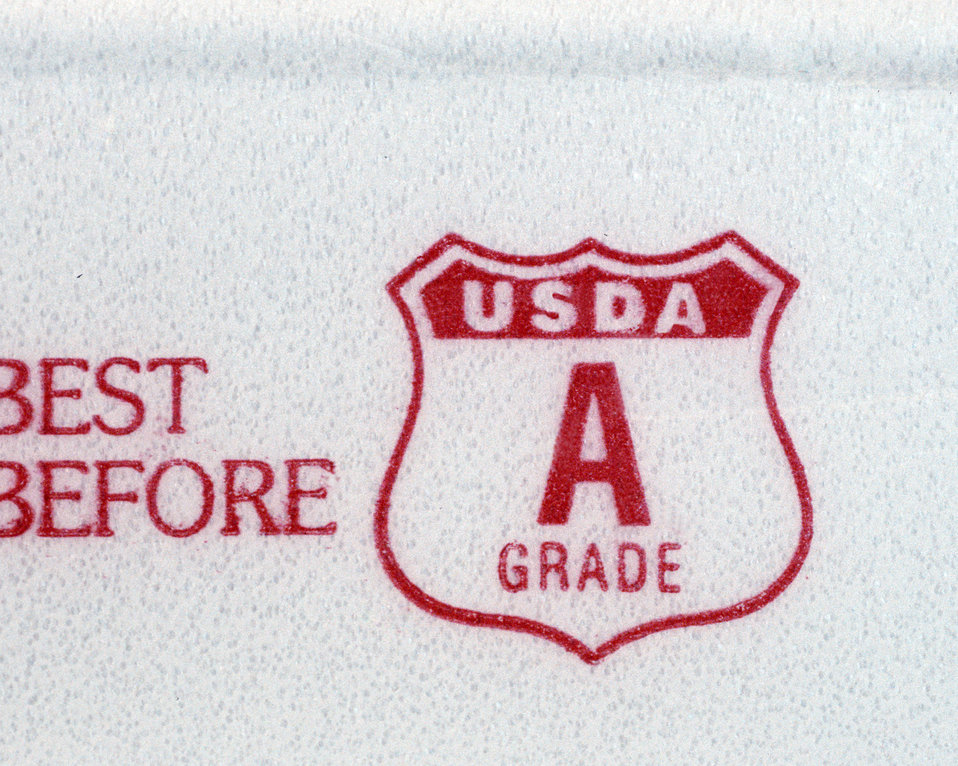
The voluntary U.S. Department of Agriculture (USDA) Agricultural Marketing Service (AMS) shell egg grading program operates under prescribed standards, grades, and weight classes as well as the shell egg grading regulations. This voluntary program provides for interested parties a national grading service based on official U.S. standards, grades, and weight classes for shell eggs. The costs for providing this grading program are paid by the user of the service. Labels for shell eggs that include the USDA grade shield indicate that USDA has officially graded that product and that the product met all requirements of the designated quality standard.